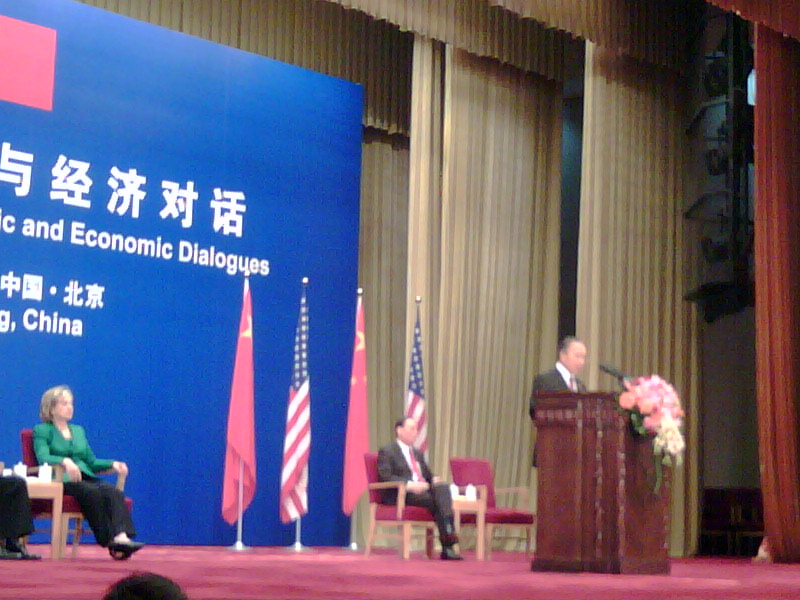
Chinese State Councilor Speaks During U.S.-China Strategic and Economic Dialogue

State Councilor of the People's Republic of China Dai Bingguo speaks during the second round of the U.S.-China Strategic and Economic Dialogue in Beijing, China, May 24, 2010. U.S. Secretary of State Hillary Rodham Clinton on stage to left.